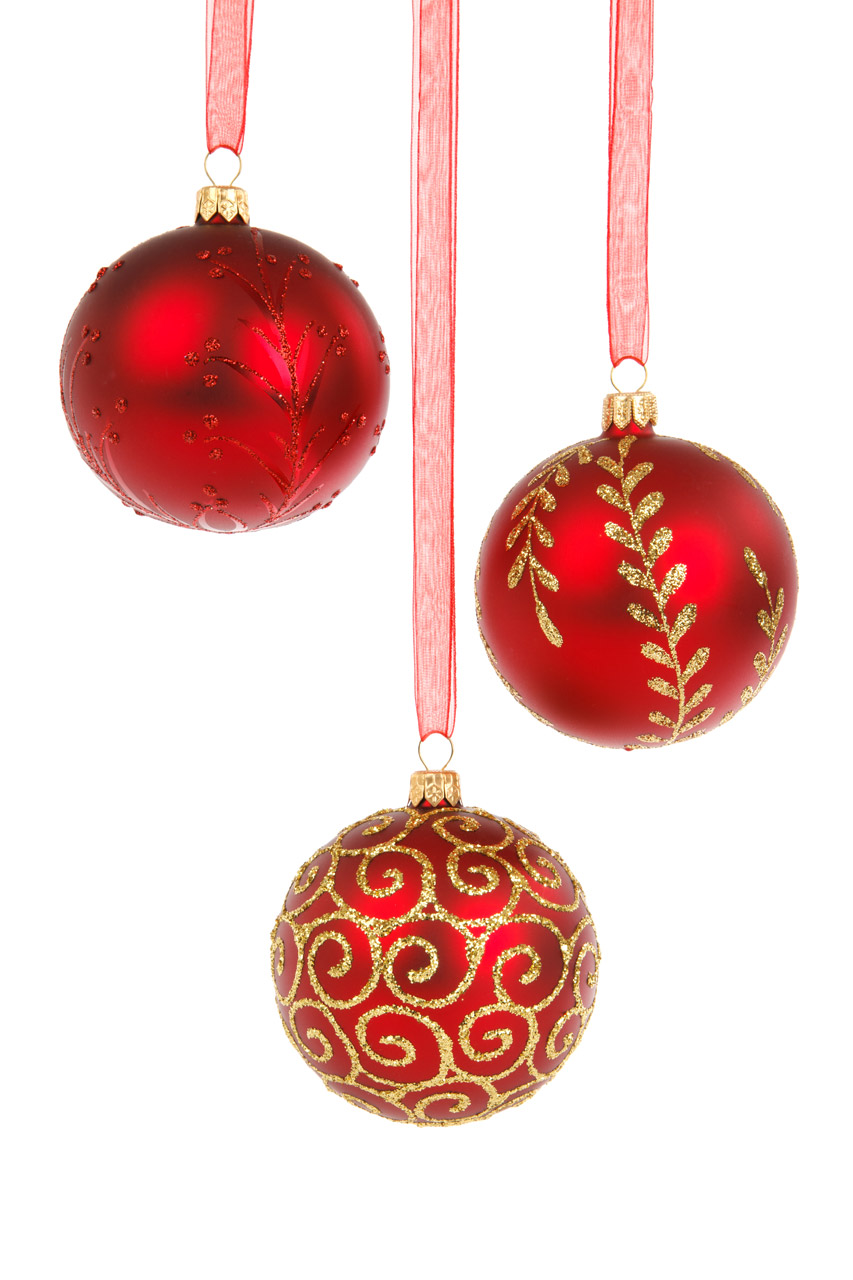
Three red baubles

Three red christmas baubles hanging isolated on white background.